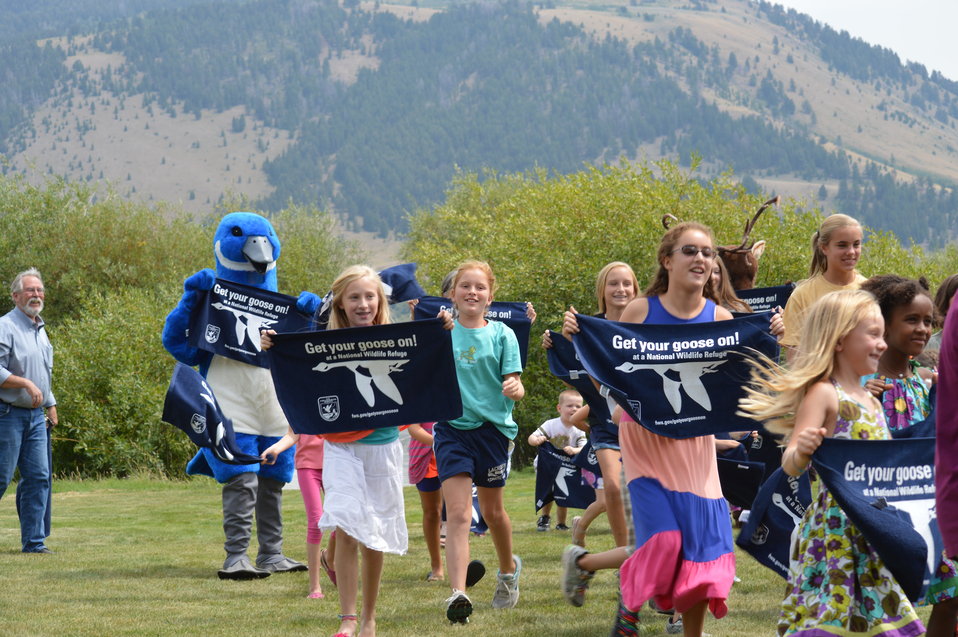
Get Your Goose On! - National Elk Refuge Style

On August 10, 2012 the U.S. Fish and Wildlife Service and Partners celebrated the 100 year anniversary of the establishment of the National Elk Refuge. In these photos, young attendees, along with Puddles the Blue Goose and the National Elk Refuge's mascot, showed us how to Get Your Goose On! with style.